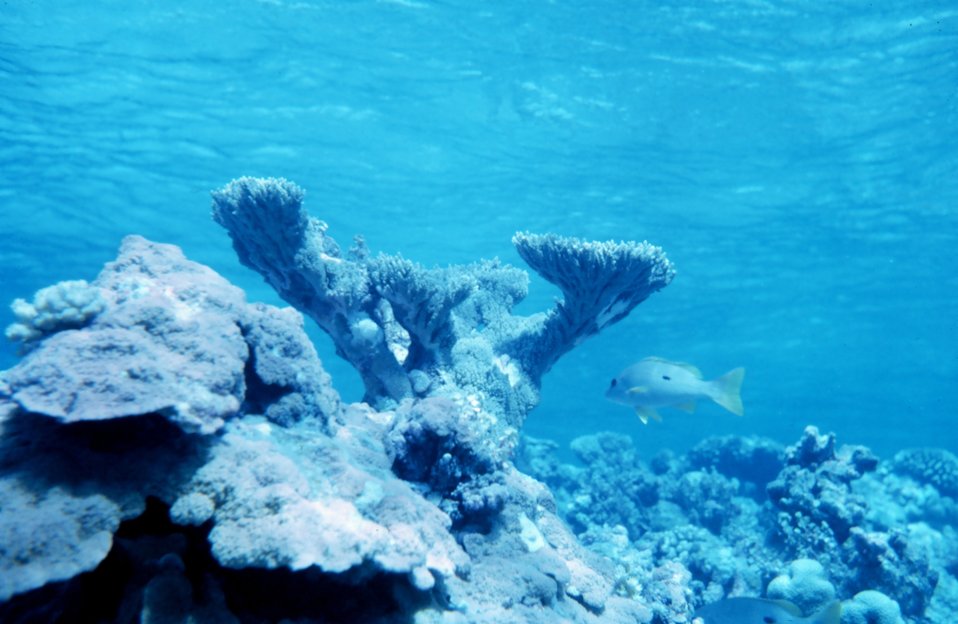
Onespot snapper (Lutjanus monostigma)